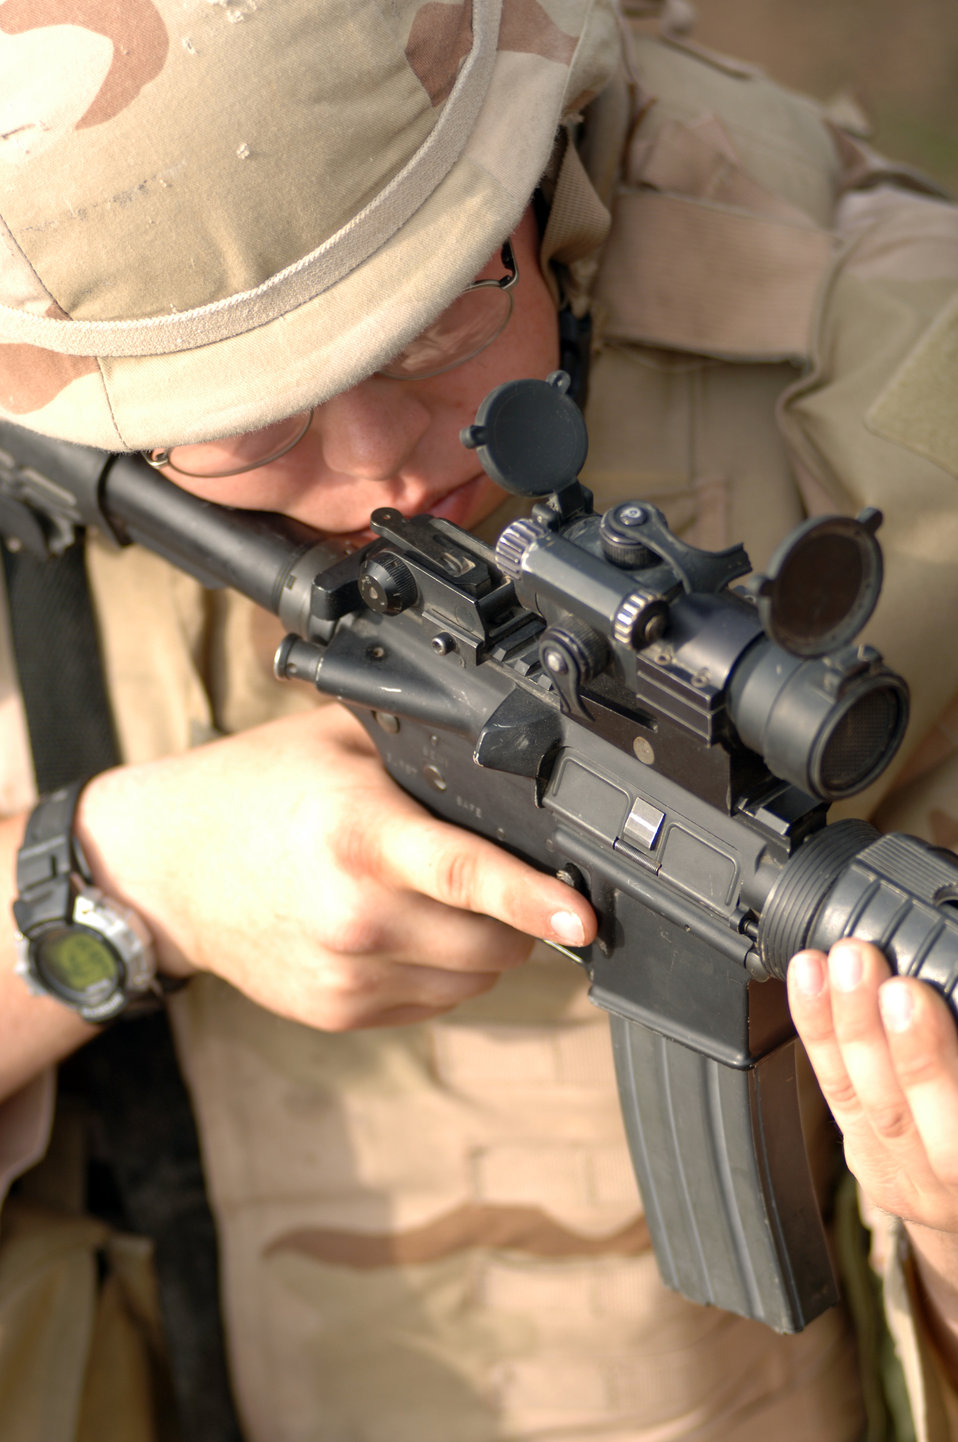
Convoy tactics

Senior Airman Christopher McDaniel secures an area while members of his element attempt to evacuate a simulated convoy casualty during the Basic Combat Convoy Training course at Camp Bullis, Texas, on Monday, April 3, 2006. The course is designed to keep Airmen battlefield focused and well-trained for convoy operations.